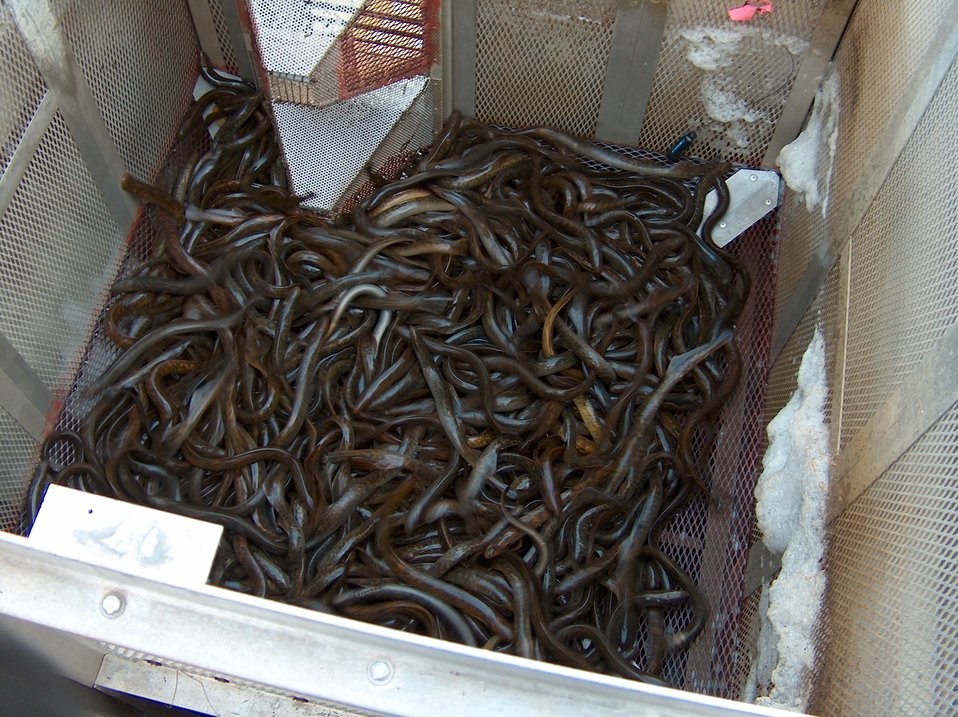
Sea Lamprey Trap at Ocqueoc River in Michigan with a Large Catch of Sea Lamprey.